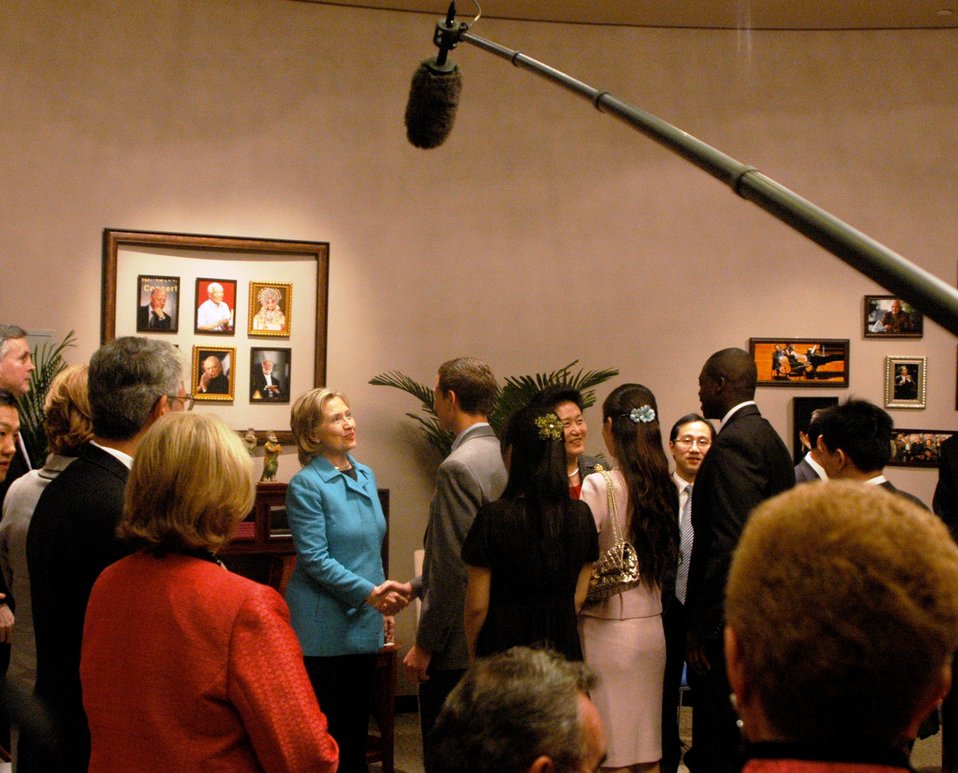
Secretary Clinton Meets With Chinese Women Civil Society Leaders

U.S. Secretary of State Hillary Rodham Clinton meets with Chinese Women Civil Society Leaders in Beijing, China, May 26, 2010.